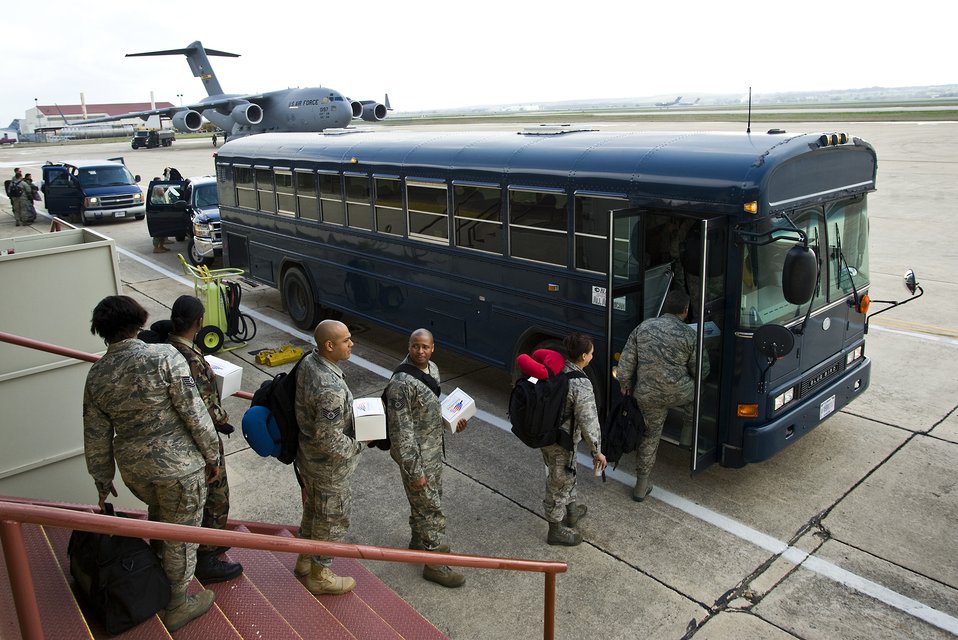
Air Force medics deploy to support Chilean medical efforts

More than 80 Airmen from 13 different bases deployed March 8, 2010, to Chile from Lackland Air Force Base, Texas, to aid local medics in their response to victims of the Feb. 27, 2010, 8.8 magnitude earthquake. The Air Force Expeditionary Medical Support team will operate in the city of Angol, Chile, and be capable of providing medical care to earthquake victims.